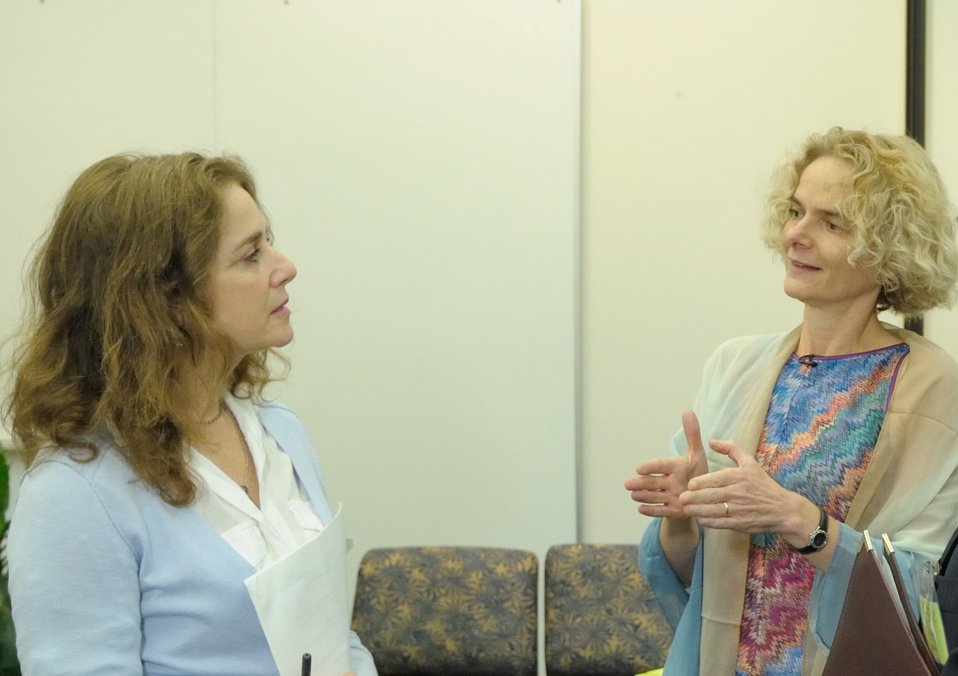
4-Winger and Volkow

Actress Debra Winger and NIDA Director Dr. Nora Volkow speak prior to NIDA’s Addiction Performance Project, held Aug 5, 2011 on the NIH Campus